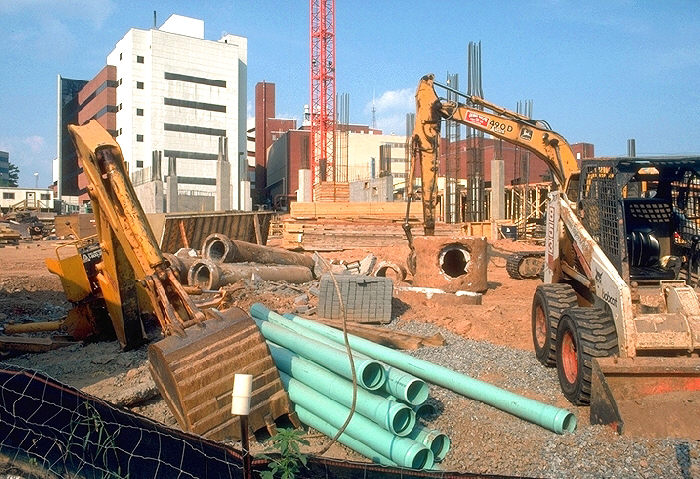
On the Centers for Disease Control's (CDC) Roybal Campus, located in metropolitan Atlanta, Georgia, this September, 1998 image depicts the early phases of construction of Building 17.